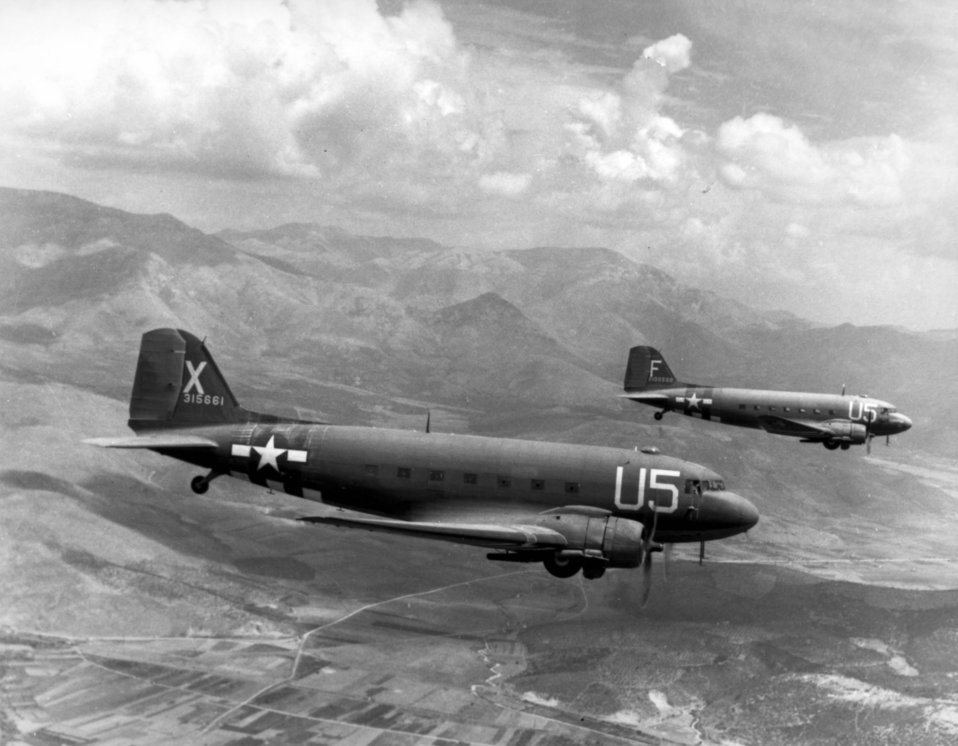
C-47

1940's -- Douglas C-47